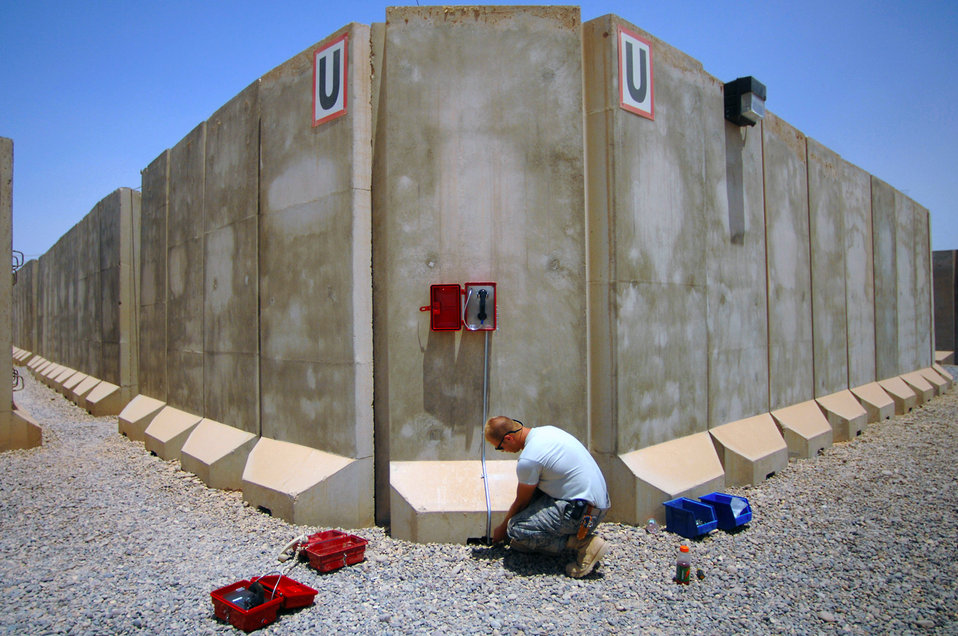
Never out of touch ...

Providing an improved system for accountability checks, Airman 1st Class Marc Spehalski installs an emergency phone June 13 in the Air Force housing area at Joint Base Balad, Iraq. He is deployed from F.E. Warren Air Force Base, Wyo.